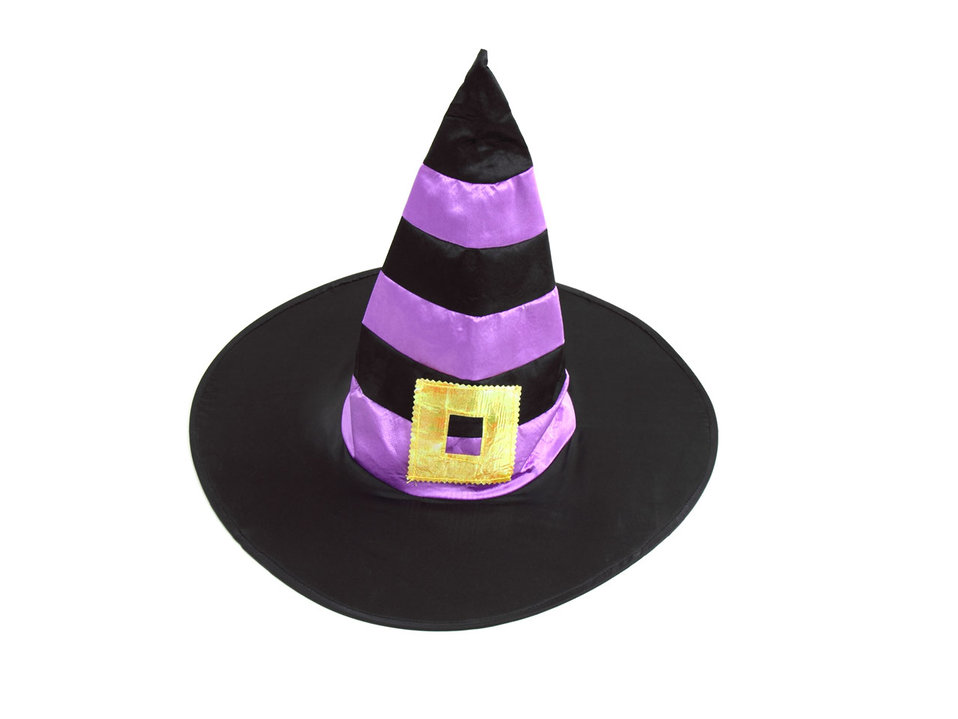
Halloween hat

Halloween witch hat on white background.